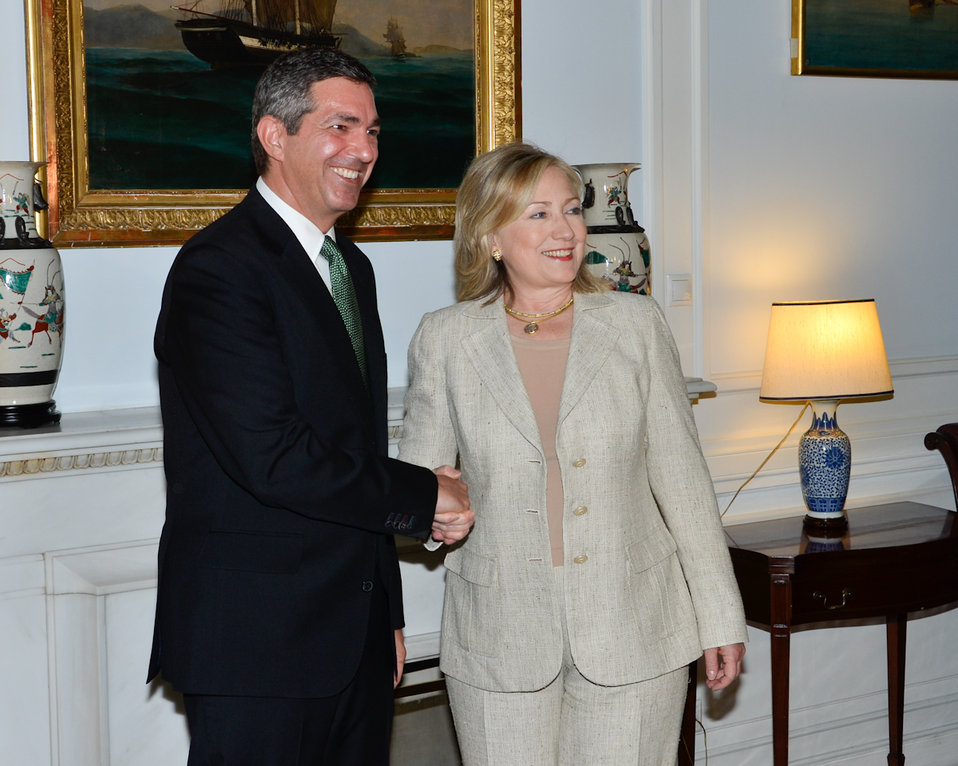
Secretary Clinton Shakes Hands With Greek Foreign Minister Lambrinidis

U.S. Secretary of State Hillary Rodham Clinton shakes hands with Greek Foreign Minister Stavros Lambrinidis in Athens, Greece, on July 17, 2011.